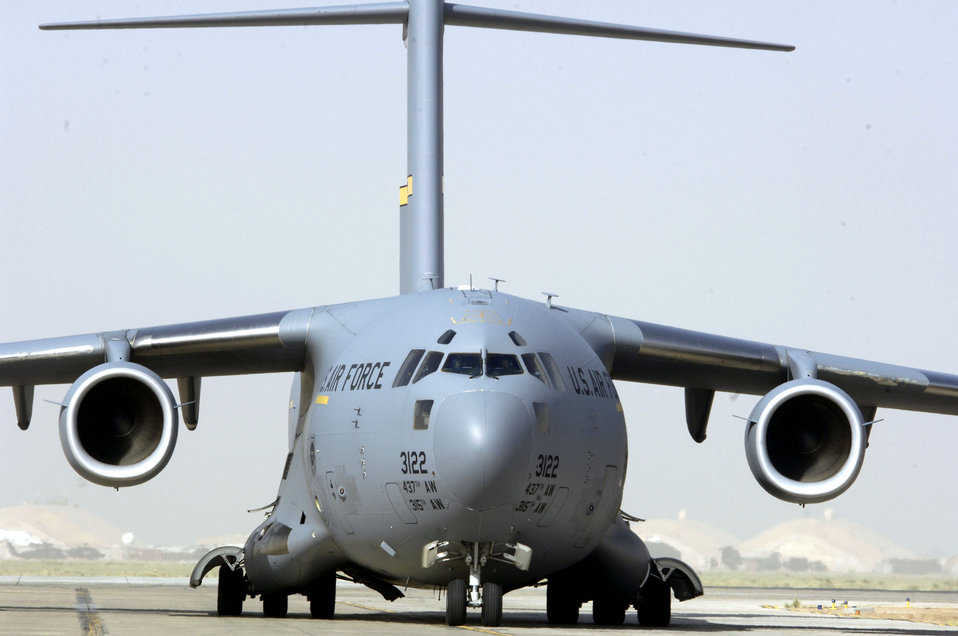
C-17 mission

A C-17 Globemaster III taxis onto the parking ramp at Balad Air Base, Iraq, on July 12 after flying a mission in support of Operation Iraqi Freedom.